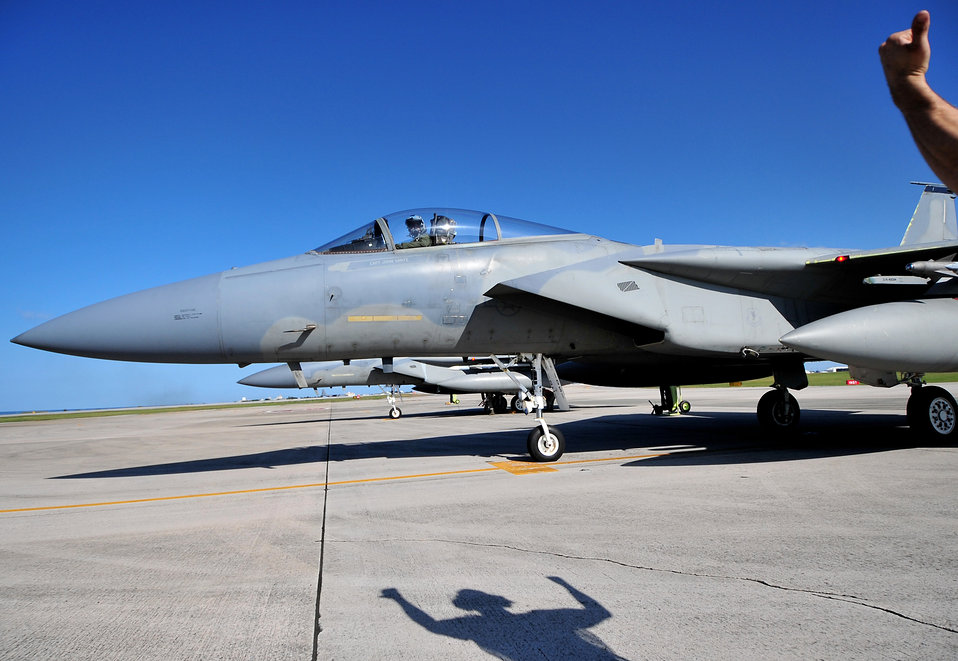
Joint Bilateral Training

A crew chief signals the pilot of an F-15C Eagle he's cleared to taxi for take-off prior to a training mission Feb. 23, 2010, at Kadena Air Base, Japan. Kadena Airmen were participating in joint bilateral training with other U.S. forces and the Japan Air Self Defense Force from Feb. 22 to 26.